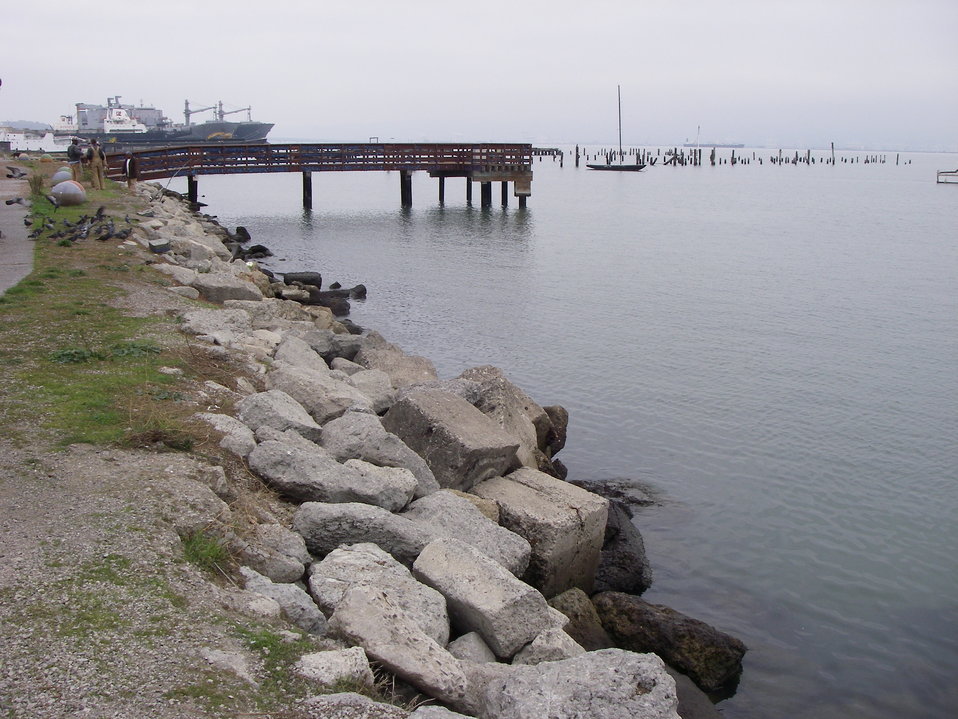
Rip-rapped shoreline at Agua Vista park, San Francisco.